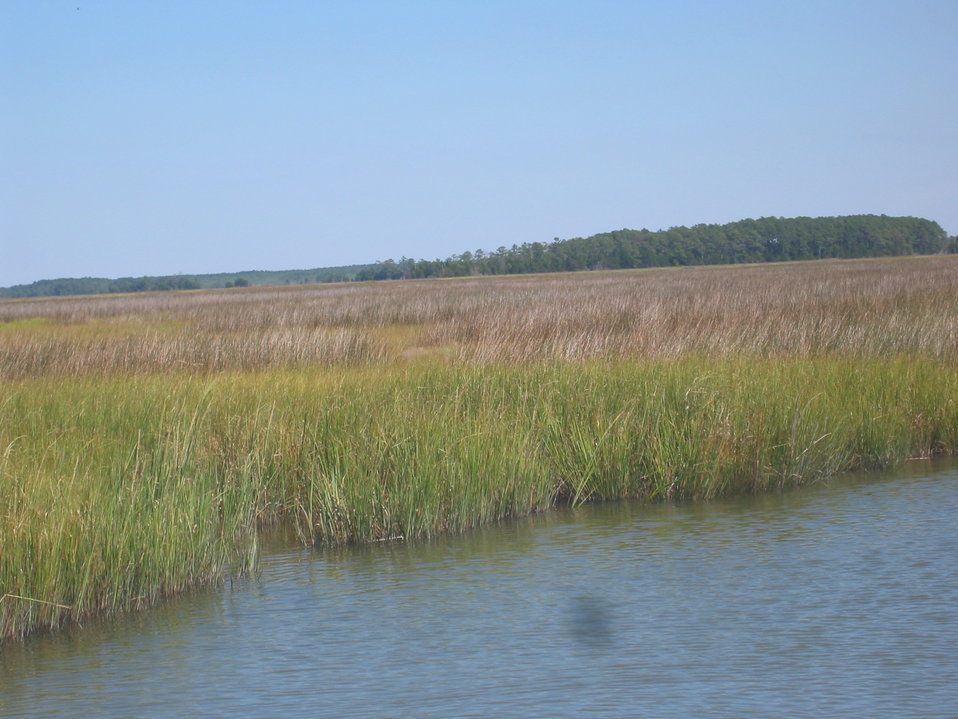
Northern Accokeek

Northern Accoceek protected islands in the Chesapeake Bay. Supported by the North American Wetlands Conservation Act.